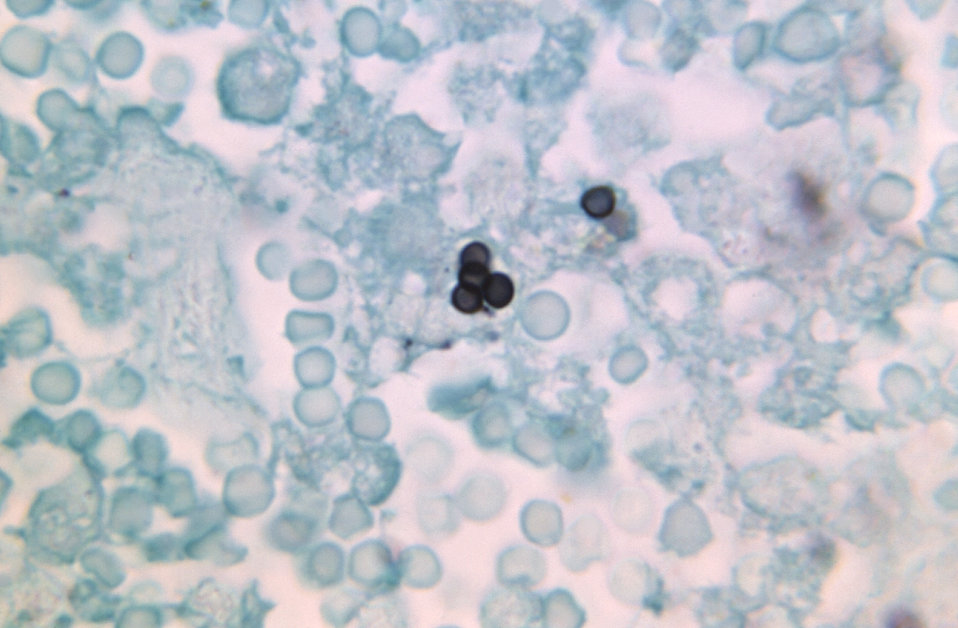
Magnified 1125X, this photomicrograph revealed the presence of a cluster of Penicillium marneffei yeast cells, that was found in a specimen of human spleen.